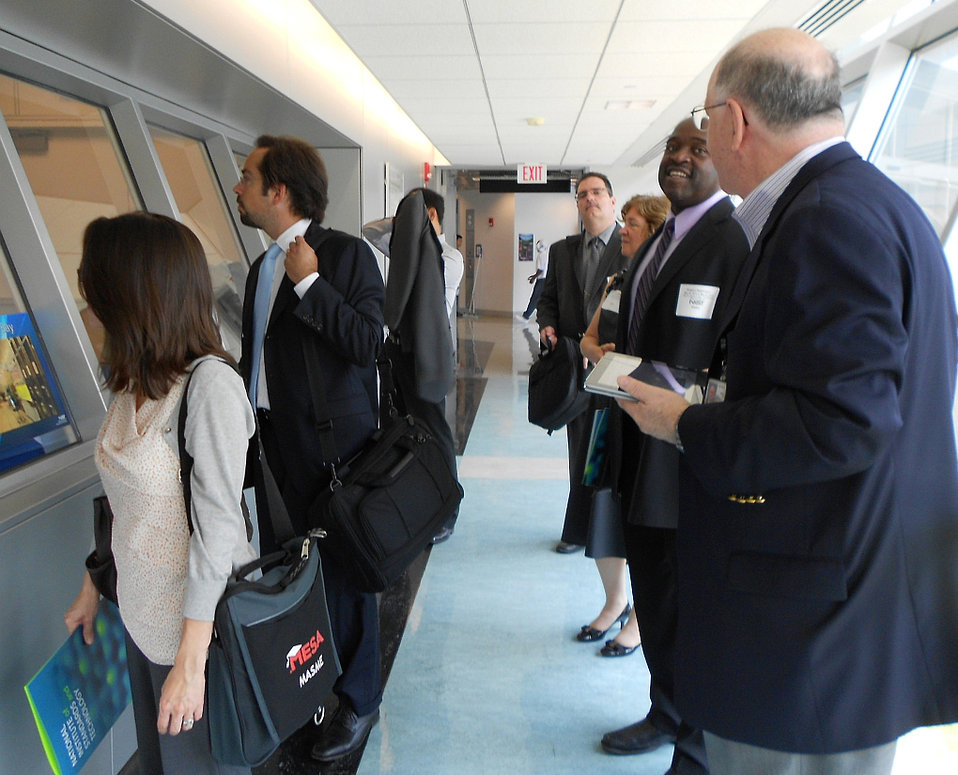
CNST Tour

Dr. Robert Celotta, Director of the NIST Center for Nanoscale Science and Technology (far right) briefs University of California, Irvine Dean of Engineering Dr. Gregory Washington (2nd from right) and his staff on research capabilities for users of the NIST Nanofab.